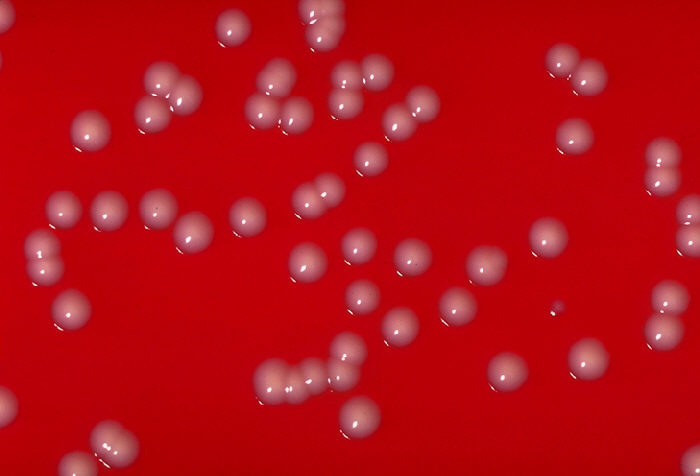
Blood agar plate culture of Corynebacterium ulcerans.